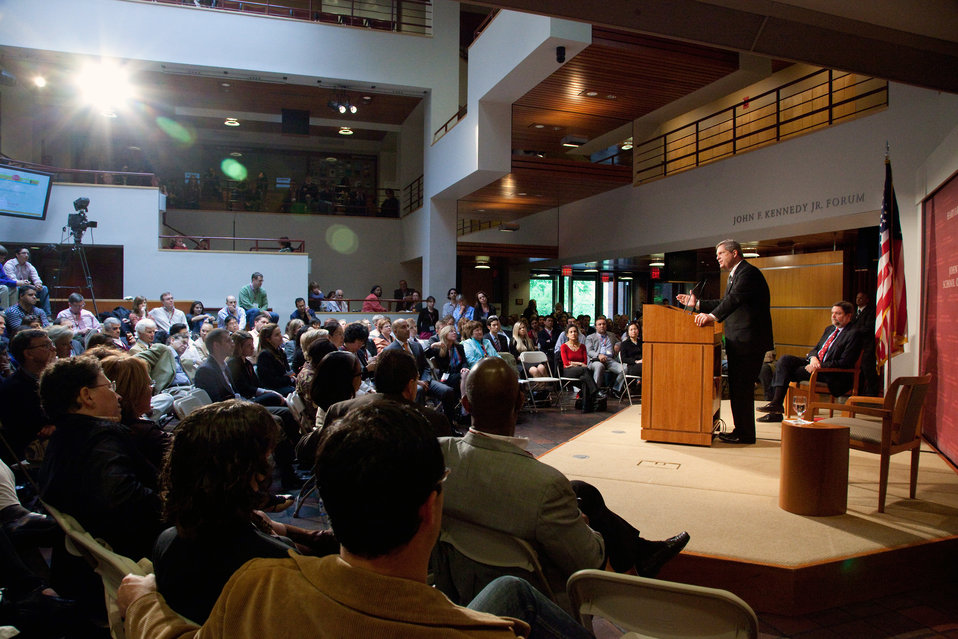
Agriculture Secretary Tom Vilsack speaking at the John F. Kennedy School of Government, at the John F. Kennedy, Jr., Forum at Harvard University in Boston, MA, on Sunday, May 15, 2011.